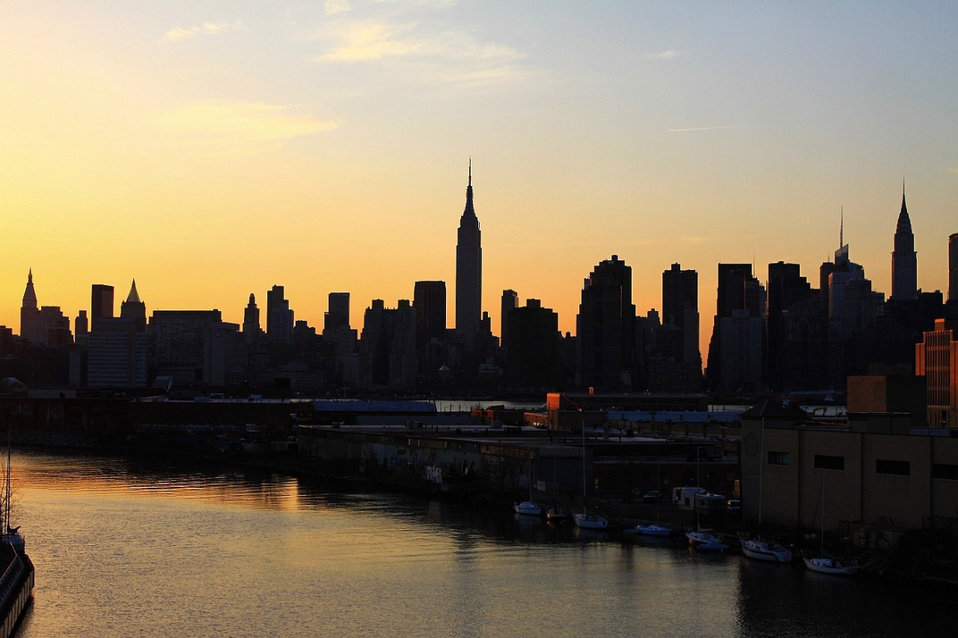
Skyline

City skyline after sunset.